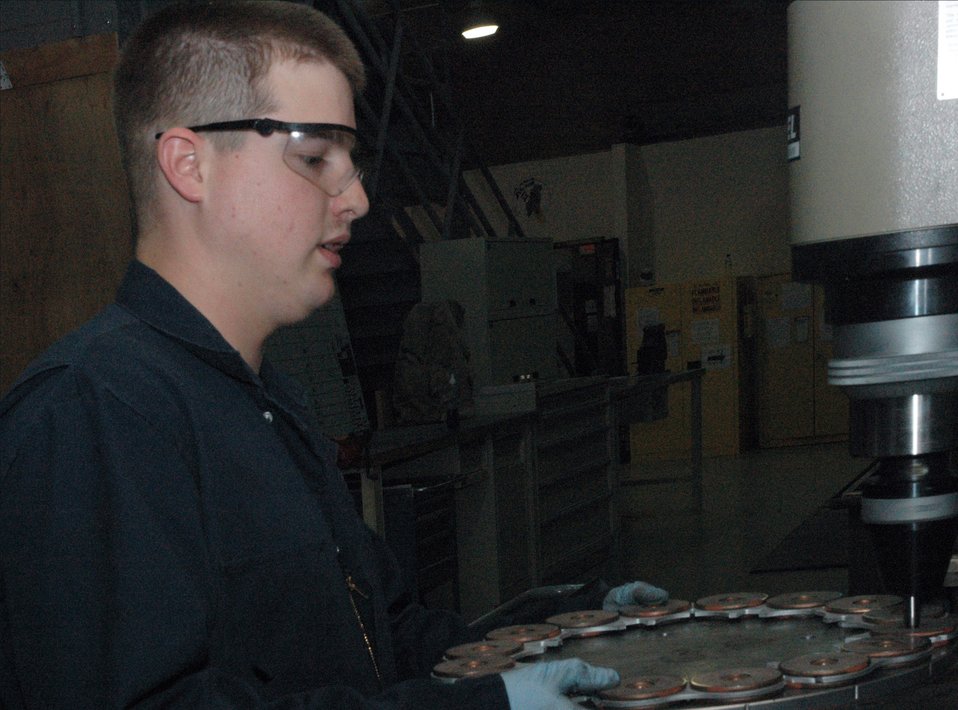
CIRF

Sgt. Mark Hughes uses a spin riveter to rivet KC-135 Stratotanker brake linings to the brake plates Feb. 25 at the only in-theater central intermediate repair facility in Southwest Asia. The spin riveter compresses the rivet in a spinning motion in order to keep the rivet from cracking.